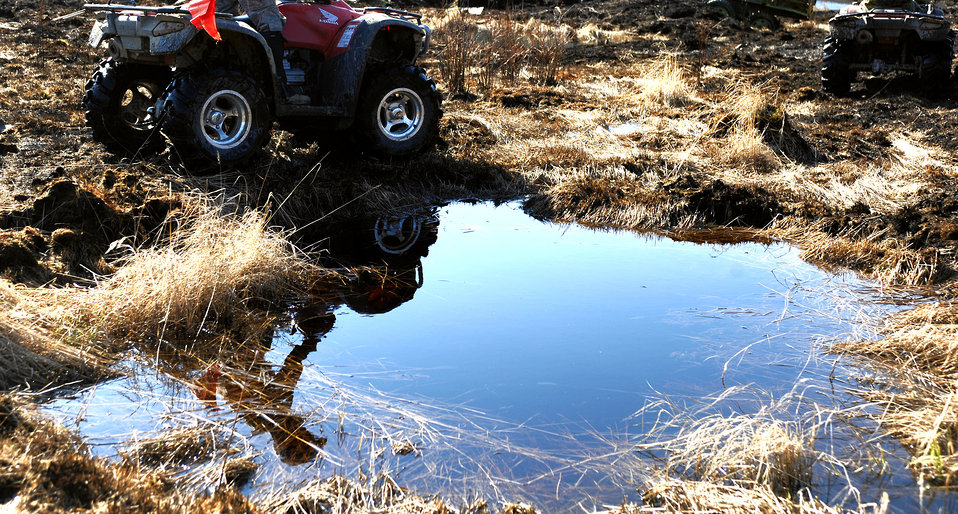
Servicemembers clear Alaskan bombing range

Airman 1st Class Brandon Wood uses an all-terrain vehicle to cover more ground in search of inert and live ordnance on the Yukon training area May 14 at Eielson Air Force Base, Alaska. The 354th Civil Engineer Squadron Explosive Ordnance Disposal shop mission is to remove hazardous ordnance and munitions residue from bombing and gunnery ranges, which allows target maintenance personnel to perform upkeep and reorganize target arrays. Airman Wood is assigned to the 354th CES EOD shop.